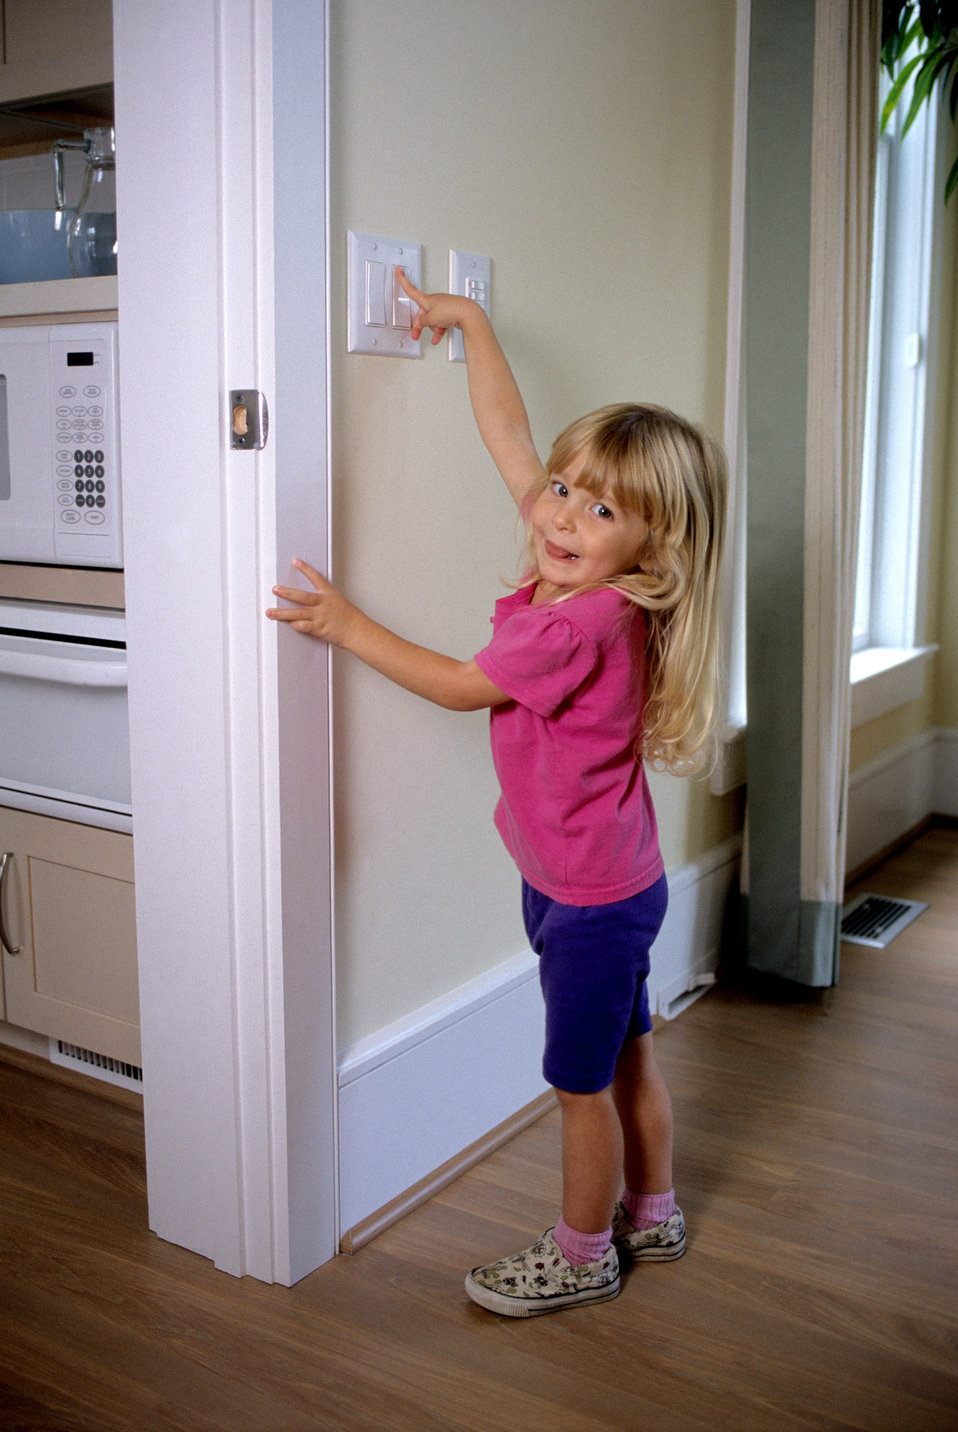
This 2000 image revealed that light switches that were lowered so that they were more reachable, might also be within reach of younger children. This particular image showed a child who was easily able to reach a standard light switch, which had been located at a lower height than usual. This was also a reminder that care should be taken when considering control height and location with respect to children's access, and particularly with respect to HVAC controls, security systems, stoves and electrical panels.